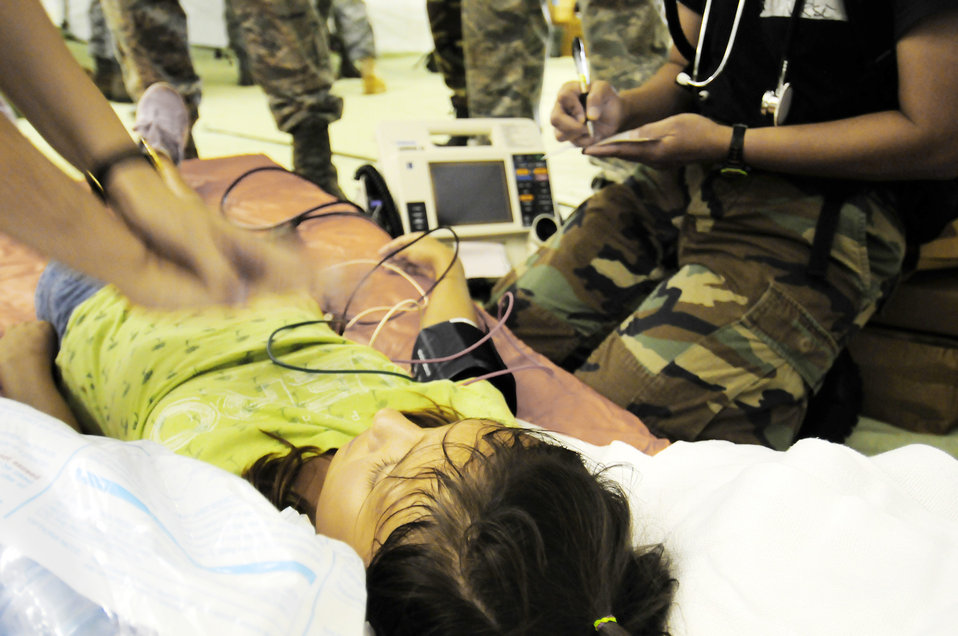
Humanitarian assistance team completes evaluation at Andersen

Mass casualty victim Alessia Castro is cared for by 36th Medical Group physicians during a simulated exercise for the Humanitarian Assistance Rapid Response Team July 15 at Andersen Air Force Base, Guam.